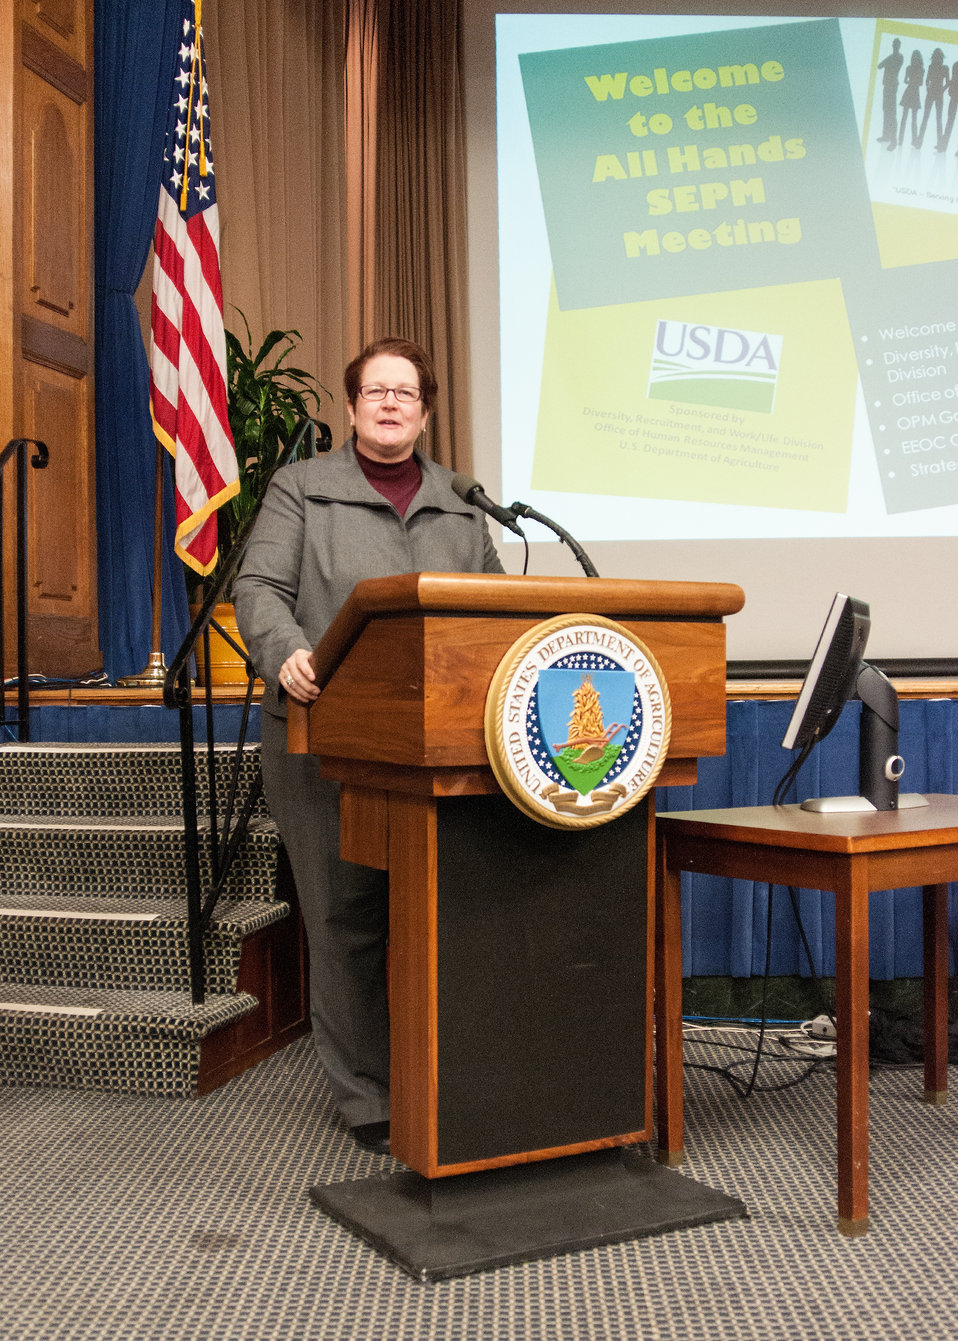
U.S. Department of Agriculture (USDA) Office of Human Resources Management Deputy Director Roberta Jeanquart offers closing remarks at the First Annual All Hands Special Emphasis Program Managers (SEPM) Meeting at the U.S. Department of Agriculture Jefferson Auditorium in Washington, D.C. on Wednesday, Mar. 13, 2013.